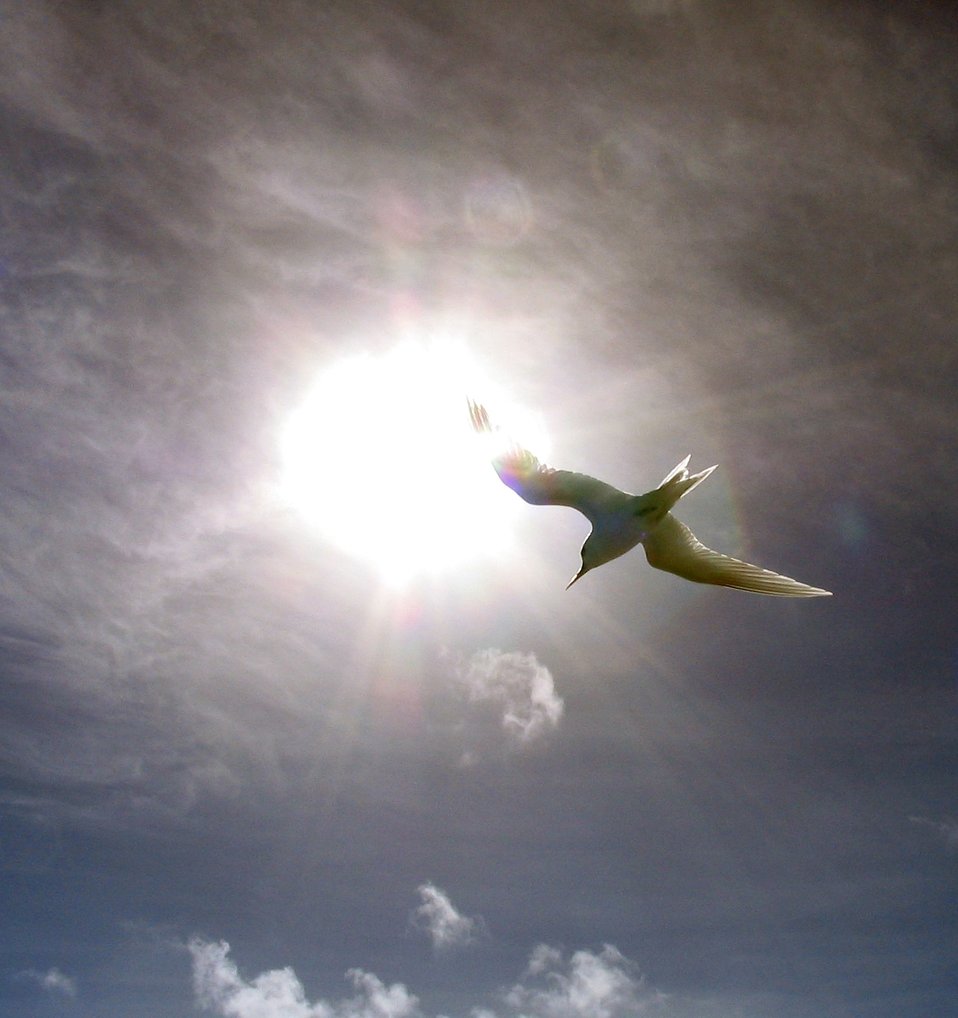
Fairy tern (Gygis alba) framed in the sun.